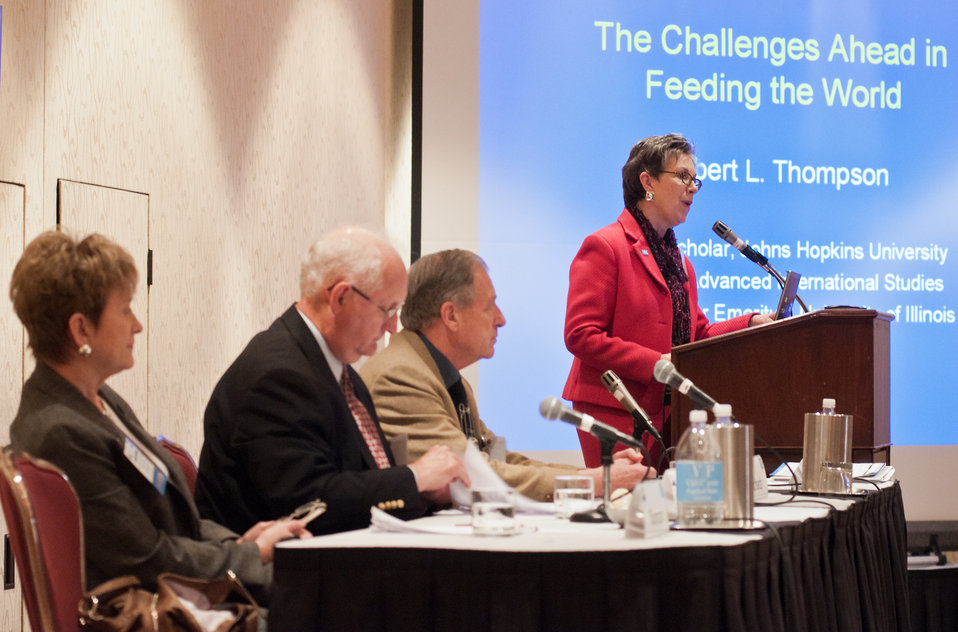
From left: Janey Thornton, Deputy Under Secretary, Food, Nutrition and Consumer Services, United States Department of Agriculture, Robert Thompson, Visiting Scholar, The Paul H. Nitze School of Advanced International Studies, Johns Hopkins University, Washington, D.C., Ken Richards, Research Manager (retired), Canadian Genetic Resource Program, Plant Gene Resources of Canada, Agriculture and Agri-Food Canada, Saskatoon Research Centre Saskatoon, Saskatchewan Alberta, Canada and Dr. Catherine Wotecki, Under Secretary, Research, Education and Economics and Chief Scientist, United States Department of Agriculture. Dr. Wotecki moderated the Global Food Security afternoon breakout session at the 2012 Agricultural Outlook Forum, “Moving Agriculture Forward, Growing, Innovating and Celebrating 150 Years” held at the Crystal gateway Marriott Hotel Arlington, Virginia, Friday, February 24, 2012. The session discussed and reviewed challenges associated with feeding a growing world population with a currently strained resource base.